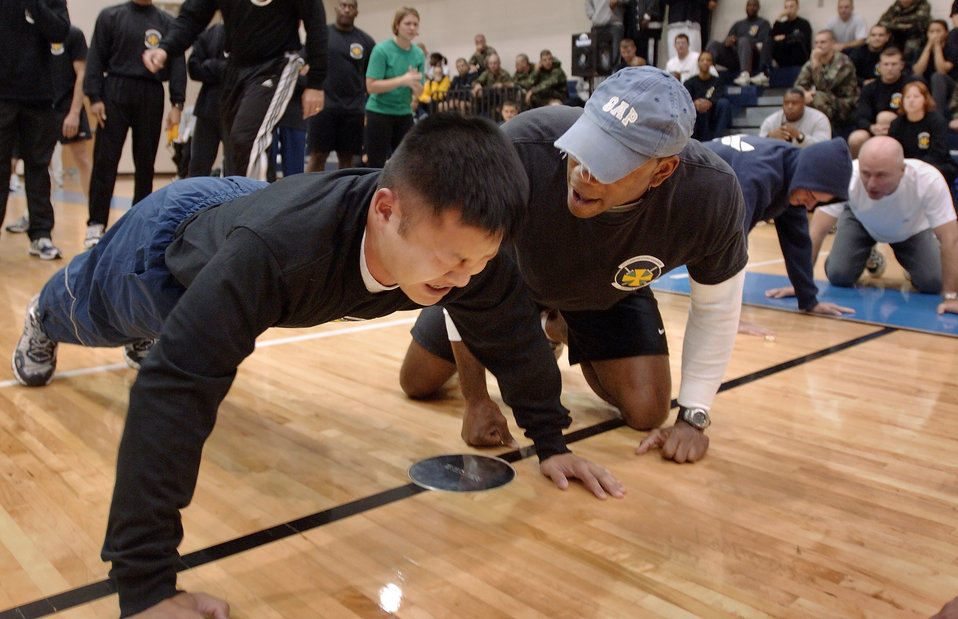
Challenge

LANGLEY AIR FORCE BASE, Va. -- 2nd Lt. Yu Zhang pushes it out as Staff Sgt. William Gibbs cheers him on during a fitness challenge. The 1st Mission Support Group held a challenge here Oct. 28 testing each squadron's abilities at pushups, sit-ups, running and tug-of-war.